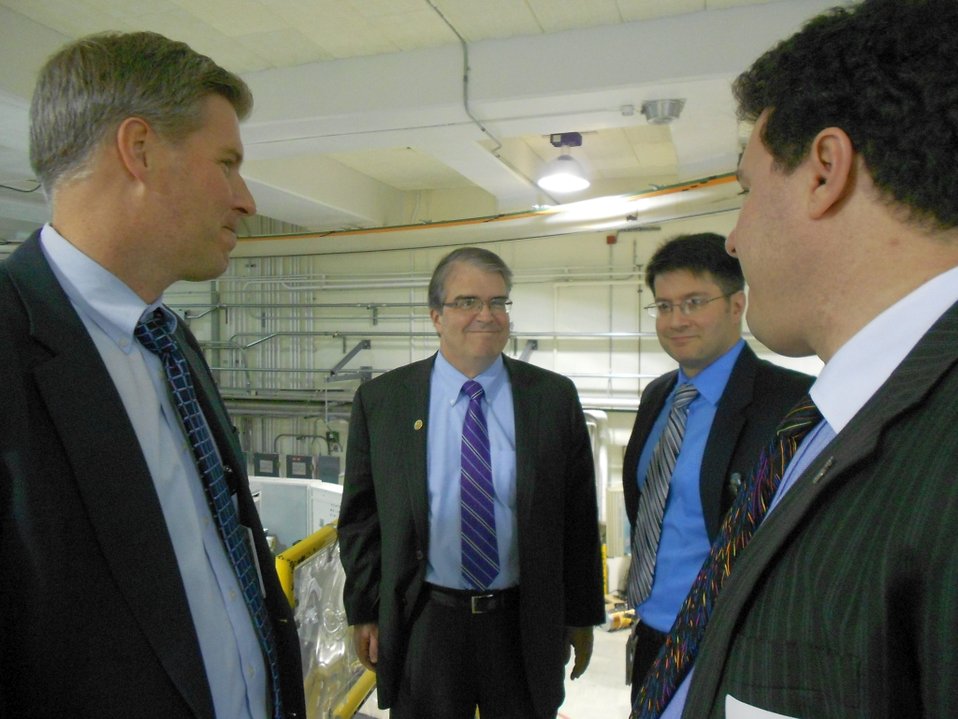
U.S. Representative Culberson Visit

U.S. Representative John Culberson of Texas (center) and Matteo Pasquali, Professor of Engineering Rice University (far left) tour the NIST Center for Neutron Research (NCNR) with Robert Dimeo, NCNR Director (right) and NIST Director Pat Gallagher (far left).